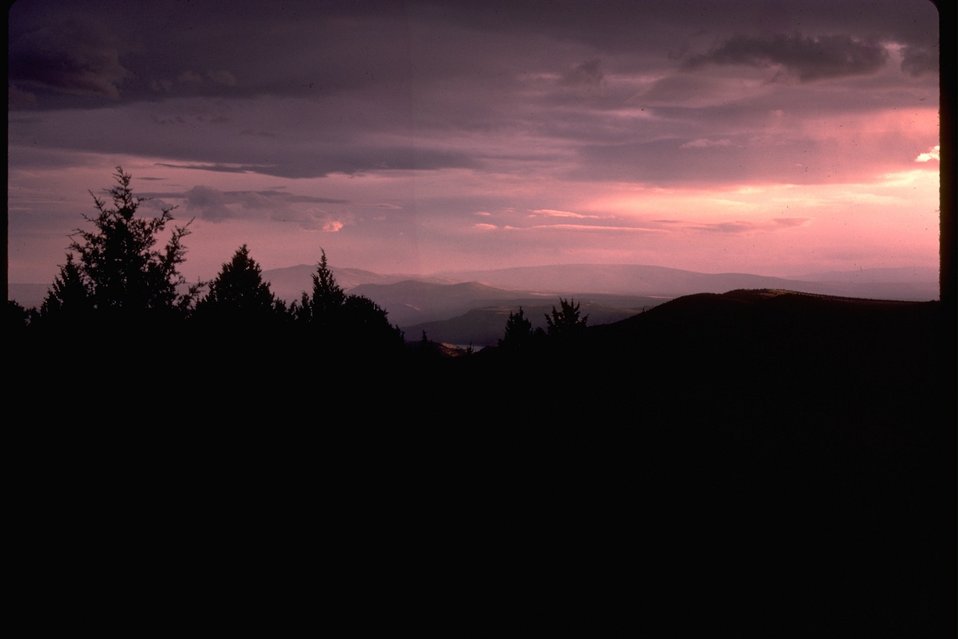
Hazy dawn during fire.